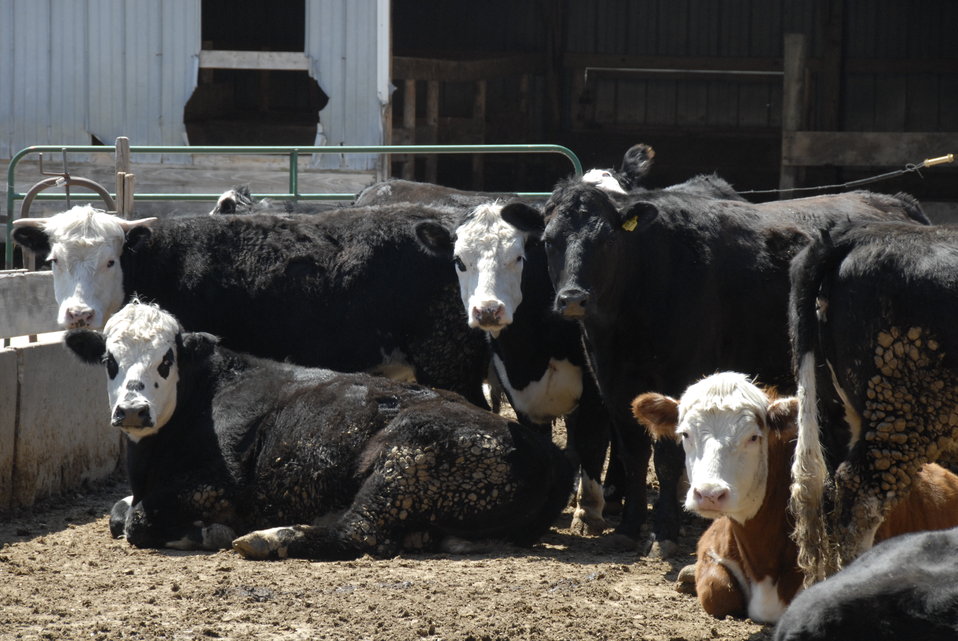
Beef cattle graze in an enclosed area on the Gehrke farm in Elgin, Illinois on April 5, 2008.